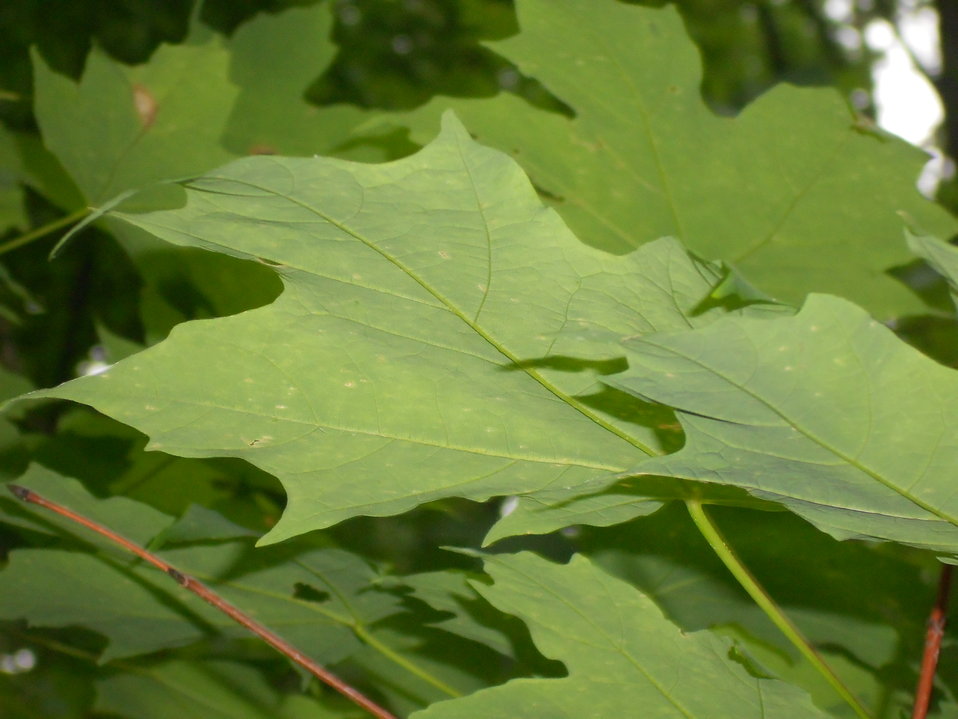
Awesome Leaf Texture!

Students participating in the Students, Nature and Photography (SNAP!) program with the Lower Great Lakes Conservation Office took pictures of nature within a local park. This student got a close up look at the texture of a maple leaf!